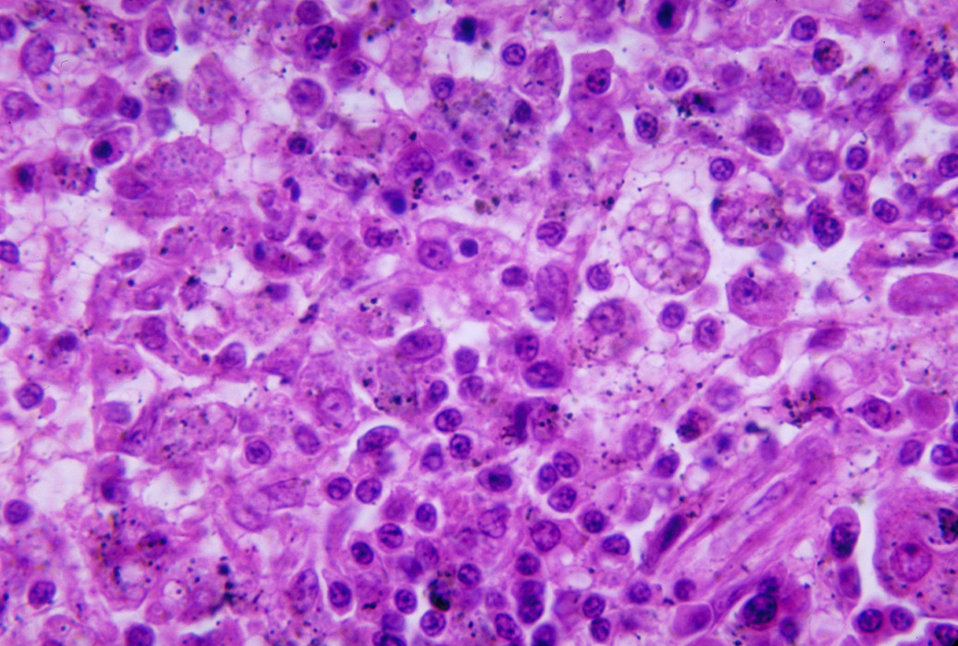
This micrograph depicts the histopathologic changes associated with cryptococcosis of the spleen.